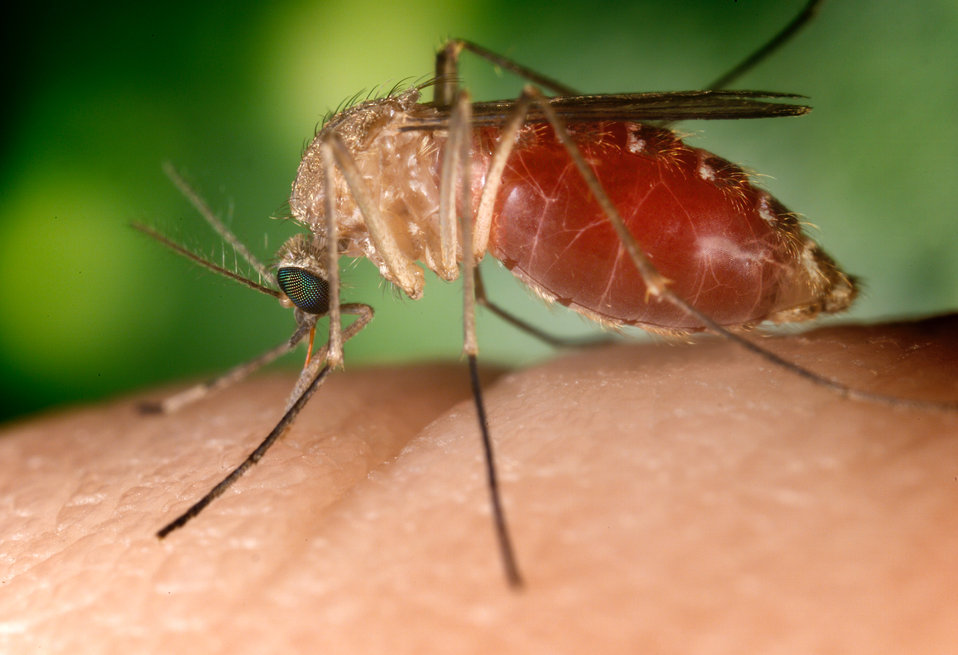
Known as a vector for the West Nile virus, this Culex quinquefasciatus mosquito has landed on a human finger.